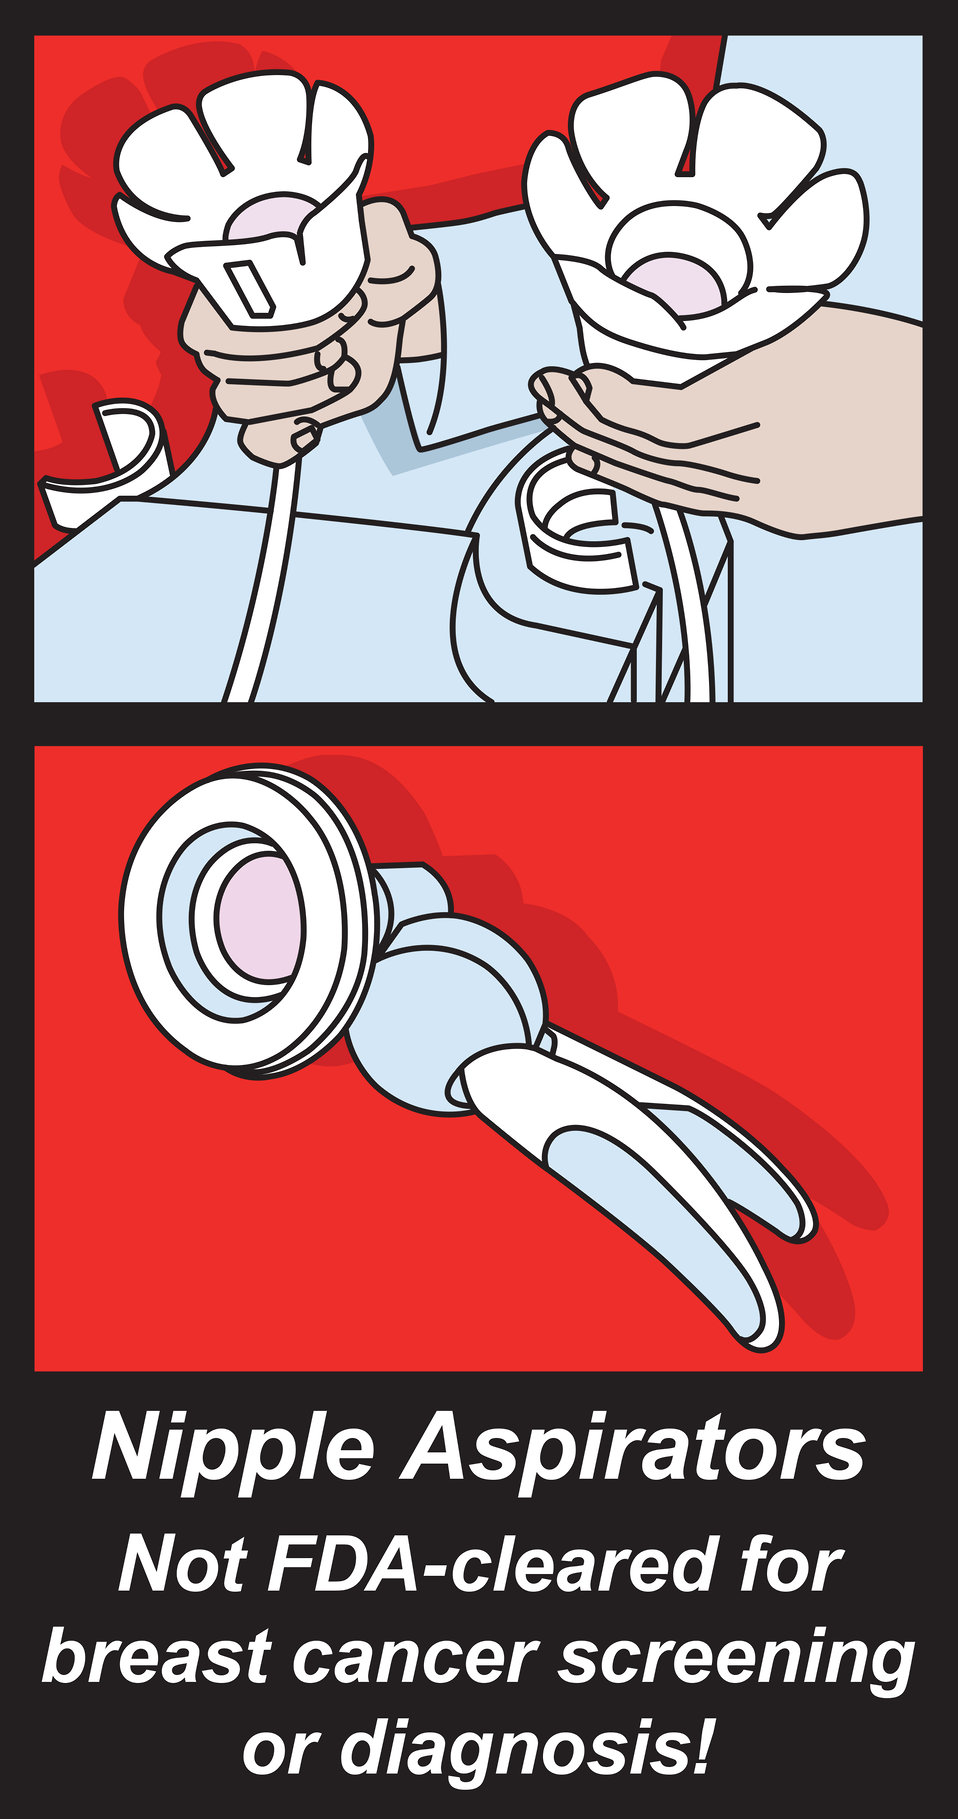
Nipple Aspirate Test No Substitute for Mammogram

Some companies are marketing a new test—the nipple aspirate test—as the latest and greatest tool in early breast cancer screening. But FDA warns that the nipple aspirate test is no substitute for a mammogram. Read this FDA Consumer Update to find out why:

Nipple Aspirate Test is No Substitute for Mammogram

This graphic is free of all copyright restrictions and available for use and redistribution without permission. Credit to the U.S. Food and Drug Administration is appreciated but not required.